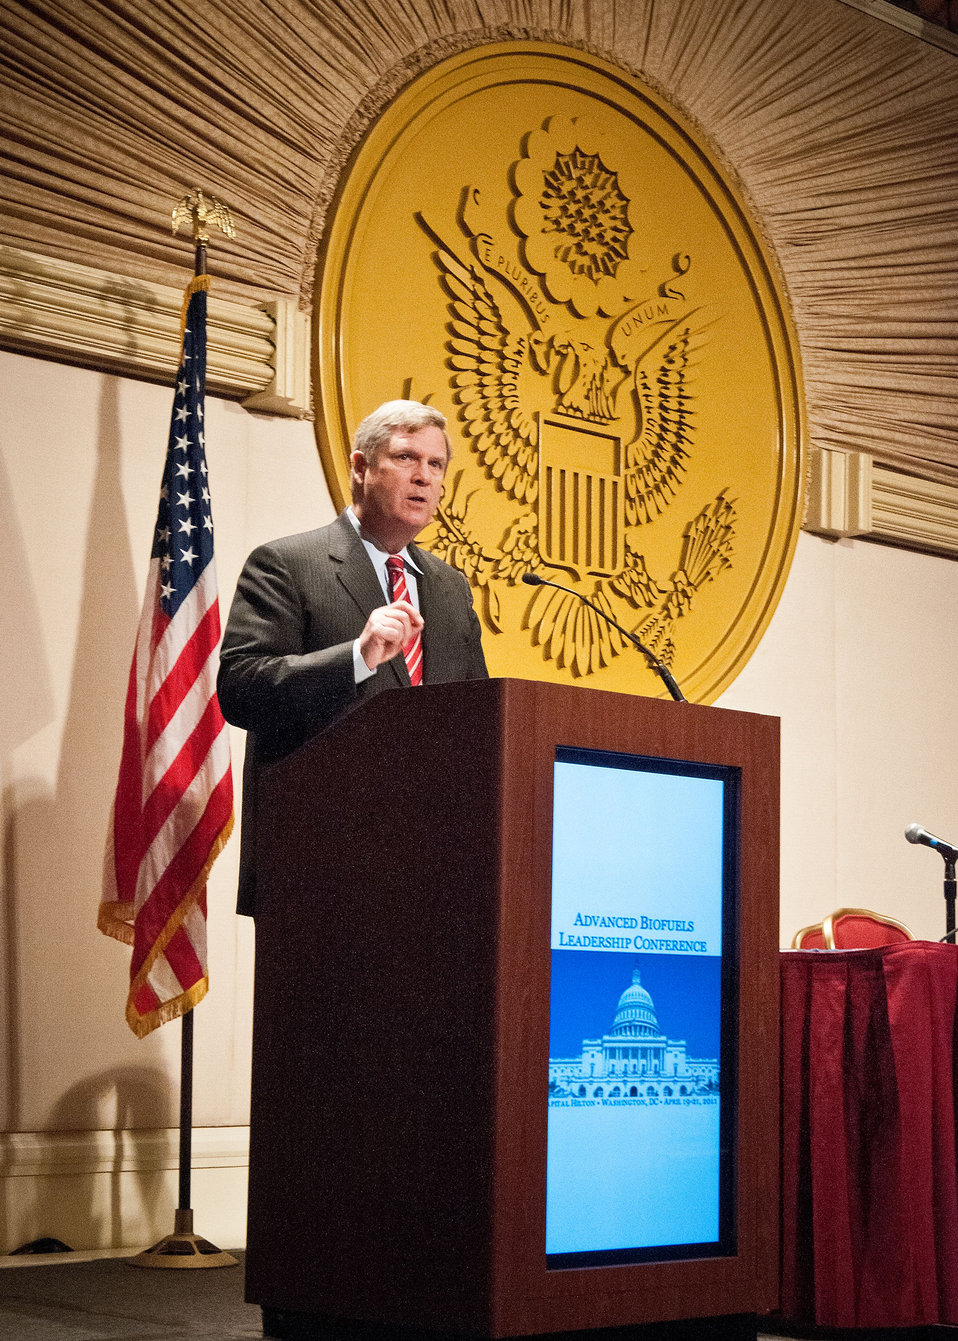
Agriculture Secretary Tom Vilsack was the keynote speaker at the Advanced Biofuels Leadership Conference to highlight the Obama Administration’s “all of the above” approach to energy in America – including renewable energy at the Capital Hilton Hotel in Washington, D.C., on Tuesday, April 3, 2012. Secretary Vilsack spoke of the economic benefits to rural America, reduced foreign oil consumption and job production. The theme of the conference was, “Go Big, Stay Strong.” As advanced biofuels move from the lab and compete for commercialization, stakeholders are strongly investing while balancing the need to stay in an uncertain policy and financial environment. At ABLC, networks are formed, relationships are developed, and decisions are made with people in a position to make a difference and those who make decisions.